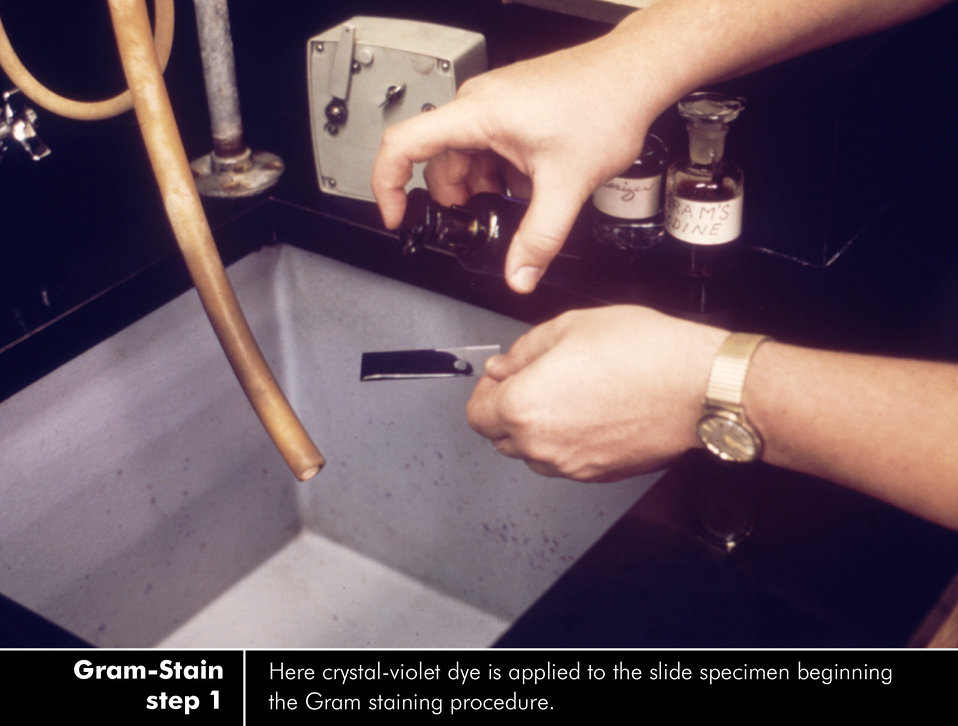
Gram-stain procedure - Step 1 of 7. See PHIL ID#'s: 3433, 3426, 3427, 3435, 3437, 3436, 3434 for the complete set.